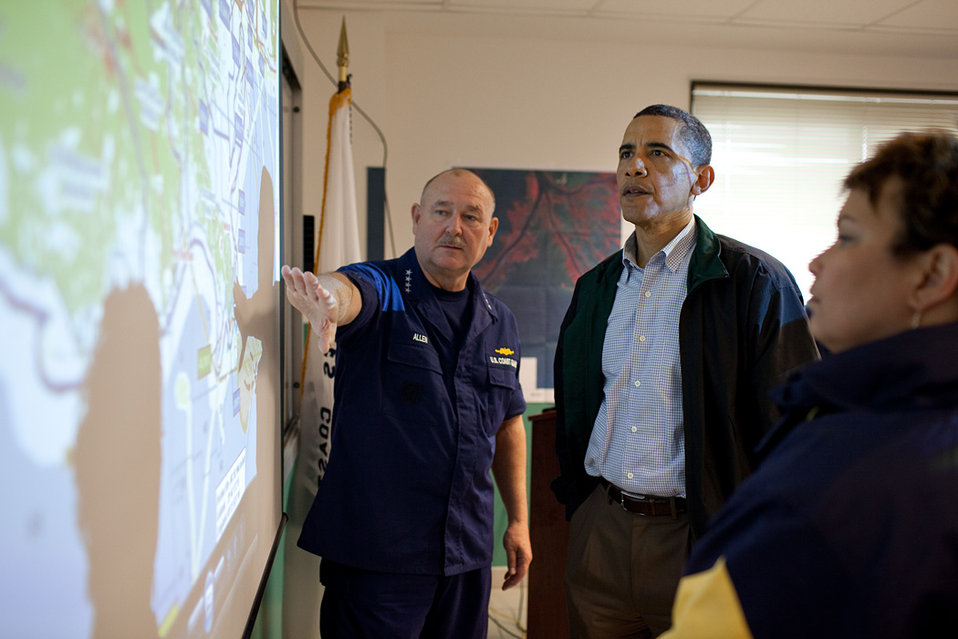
Administration Responds to BP Oil Spill

May 2, 2010 - U.S. Coast Guard Commandant Admiral Thad Allen, who is serving as the National Incident Commander, and EPA Administrator Lisa P. Jackson, brief President Barack Obama about the situation along the Gulf Coast following the BP oil spill at the Coast Guard Venice Center in Venice, La..